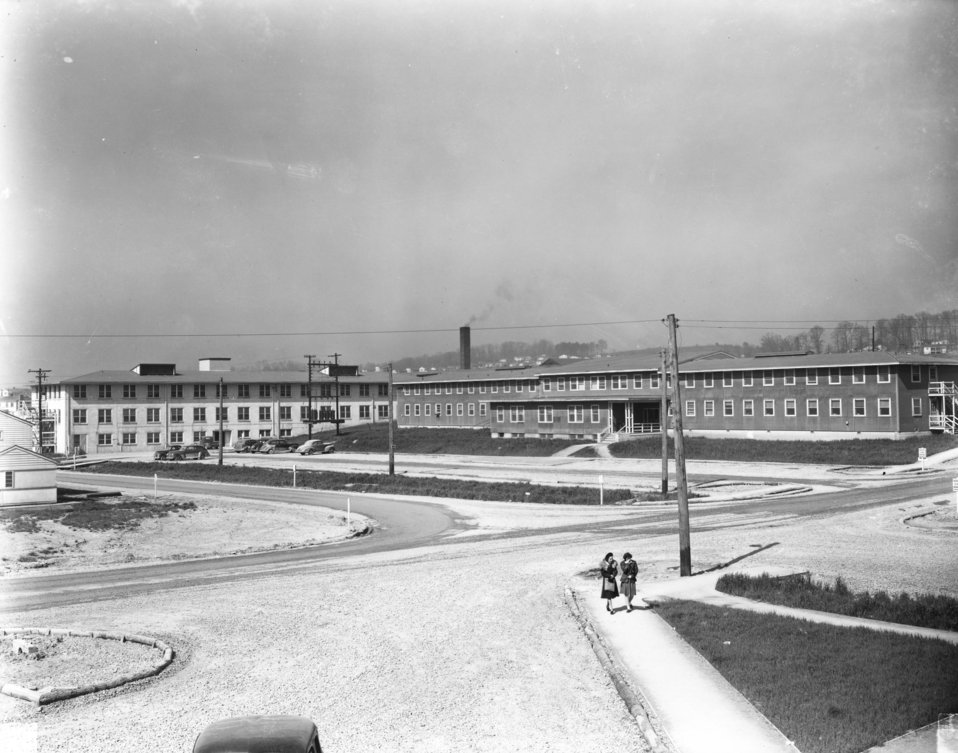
Medical at Oak Ridge